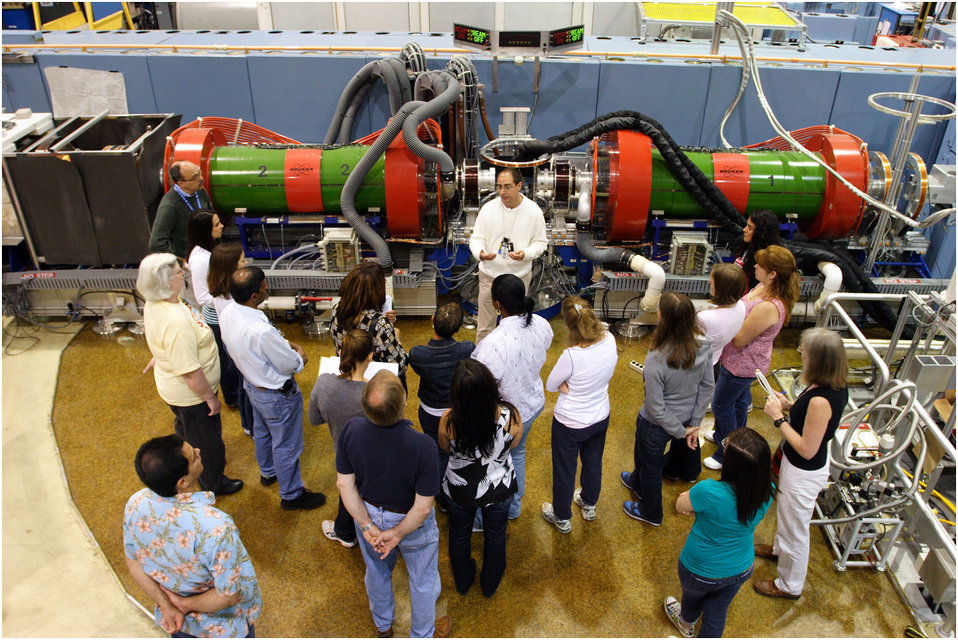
Summer Institute; Teachers

Members of the 2010 class of the NIST Summer Institute for Middle School Science Teachers attending a presentation on cold neutron research at NIST. Eighteen teachers took part in the 2010 program.